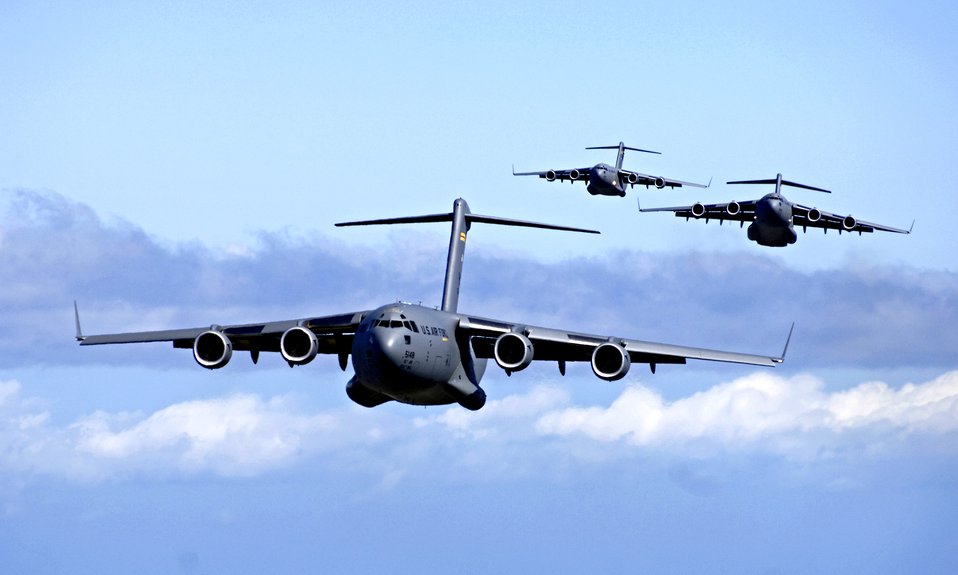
C-17 airdrop training mission

C-17 Globemaster IIIs from the 535th Airlift Squadron, Hickam Air Force Base, Hawaii participate in a airdrop training mission May 16, 2006. The 535th AS is conducting the training to provide multi-element training for the pilots and maintain aircrew proficiency.